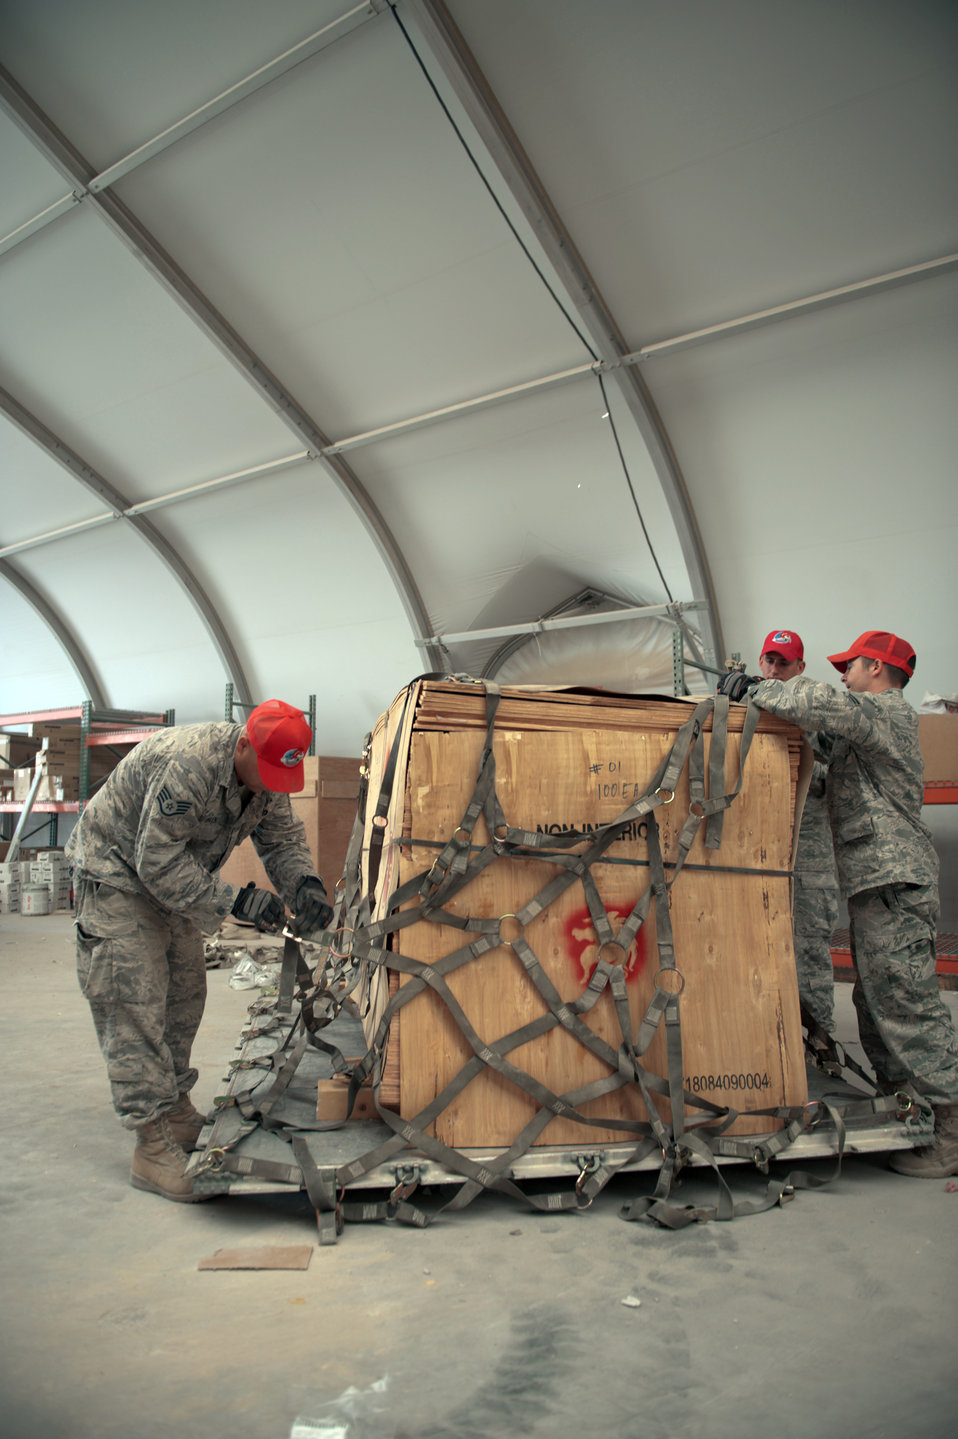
Airmen build bare bases 1 pallet at a time

Airmen of the 1st Expeditionary RED HORSE Group logistics and pallet build-up team secure a pallet of wood to be shipped Sept. 15, 2009, at an air base in Southwest Asia. Personnel assigned to the logistics and pallet build-up team support all RED HORSE operations downrange by obtaining and shipping required equipment for mission success.